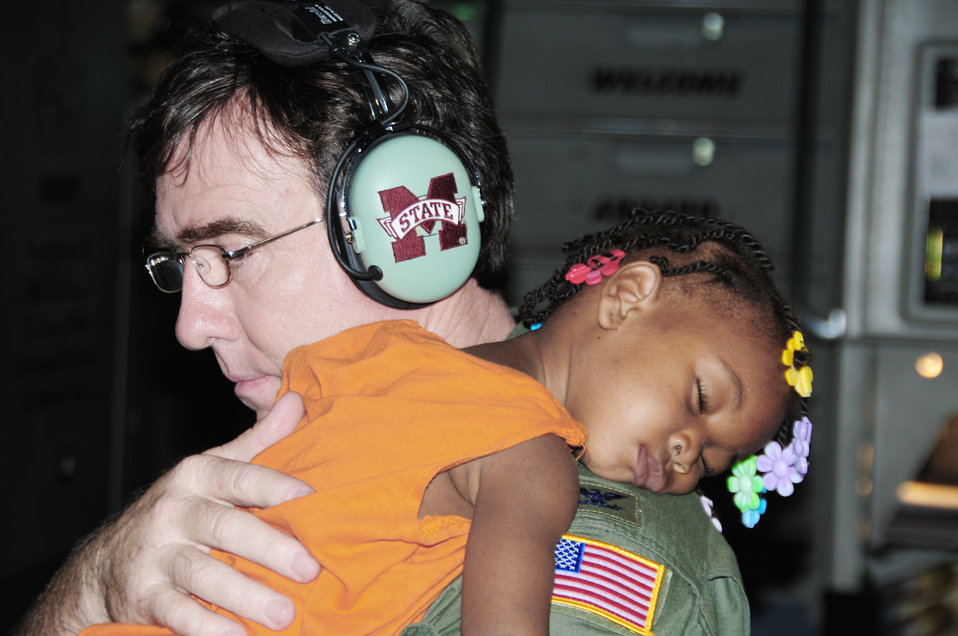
Operation Unified Response

Col. Todd Wall takes time out from his job to hold a Haitian baby for a mother who was asleep from exhaustion Jan. 21, 2010, at Toussaint L?Ouverture International Airport in Port-au-Prince, Haiti. Colonel Wall is a C-17 Globemaster III cargo plane pilot.